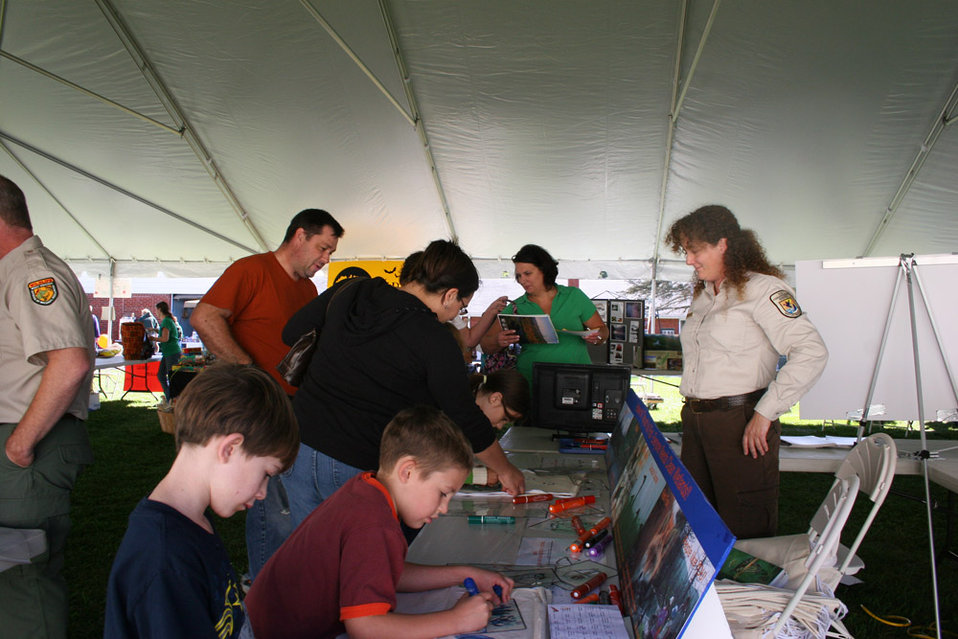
Freshwater Folk Festival

The 5th Annual Freshwater Folk Festival at White Sulphur Springs National Fish Hatchery in West Virginia.Credit: USFWS